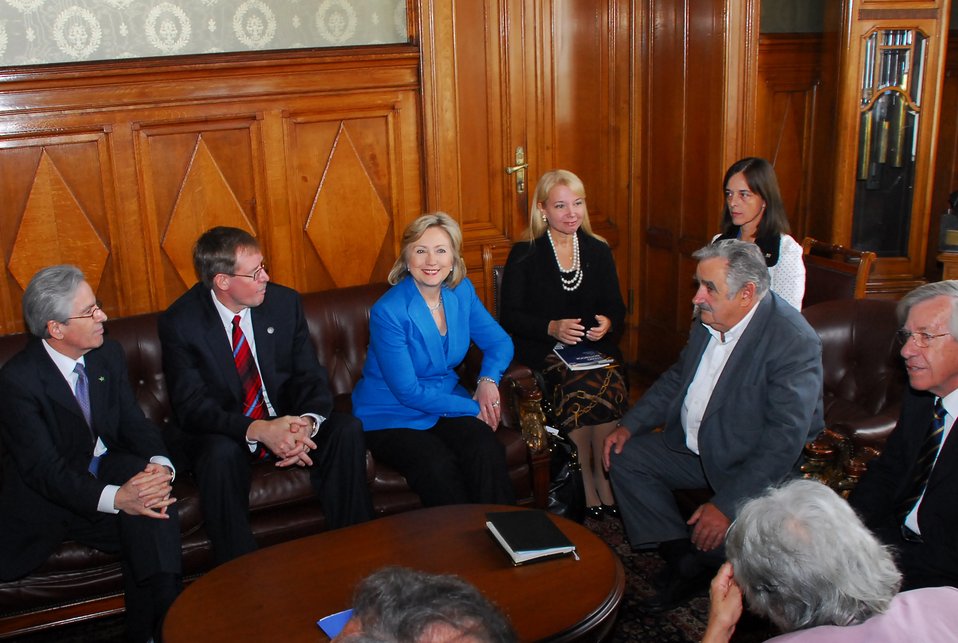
Secretary Clinton Meets with Uruguayan President-elect

U.S. Secretary of State Hillary Rodham Clinton meets with Uruguayan President-elect José Mujica and Vice President-elect Danilo Astori, a few hours before the Inauguration Ceremony. Also in the meeting are: U.S. Ambassador to Uruguay David Nelson, Assistant Secretary Arturo Valenzuela, Uruguayan Ambassador to the U.S. Carlos Gianelli, and future First Lady, Senator Lucía Topolansky in Montevideom, Uruguay March 1, 2010.